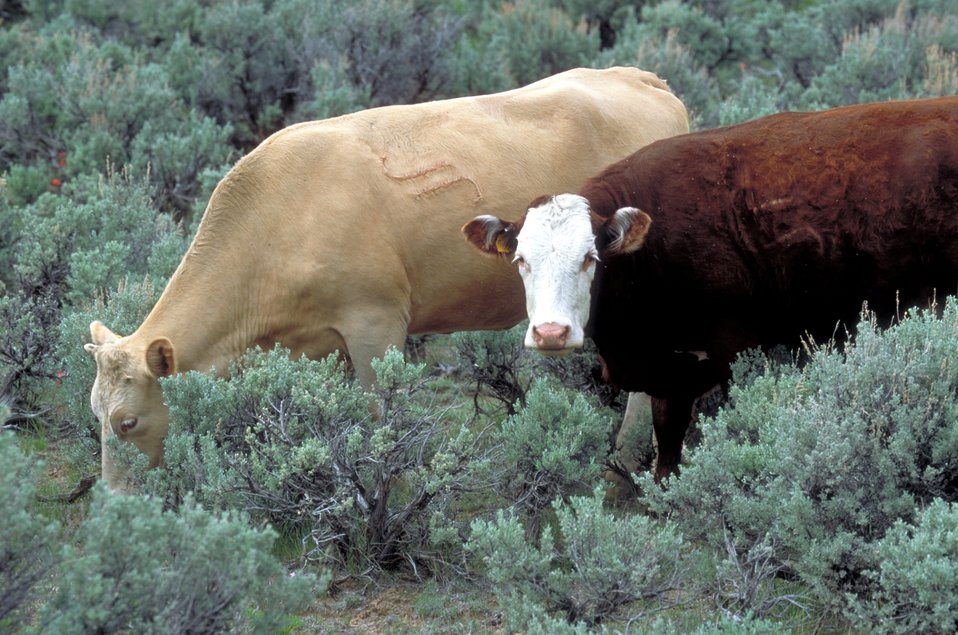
Livestock grazing on BLM lands near Price, Utah.